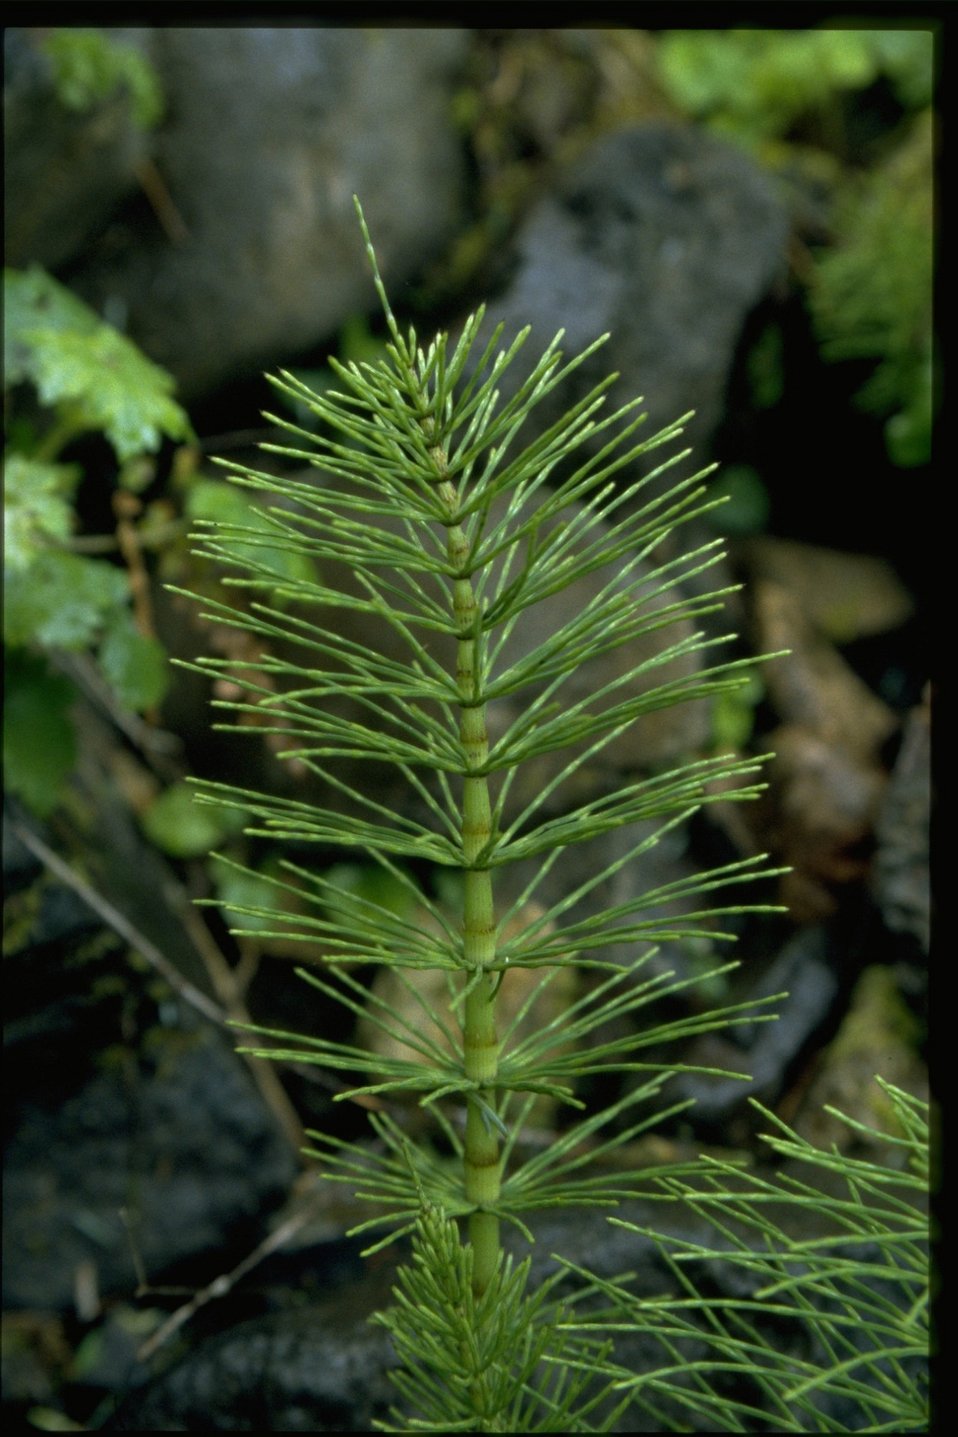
Equisetum arvense.